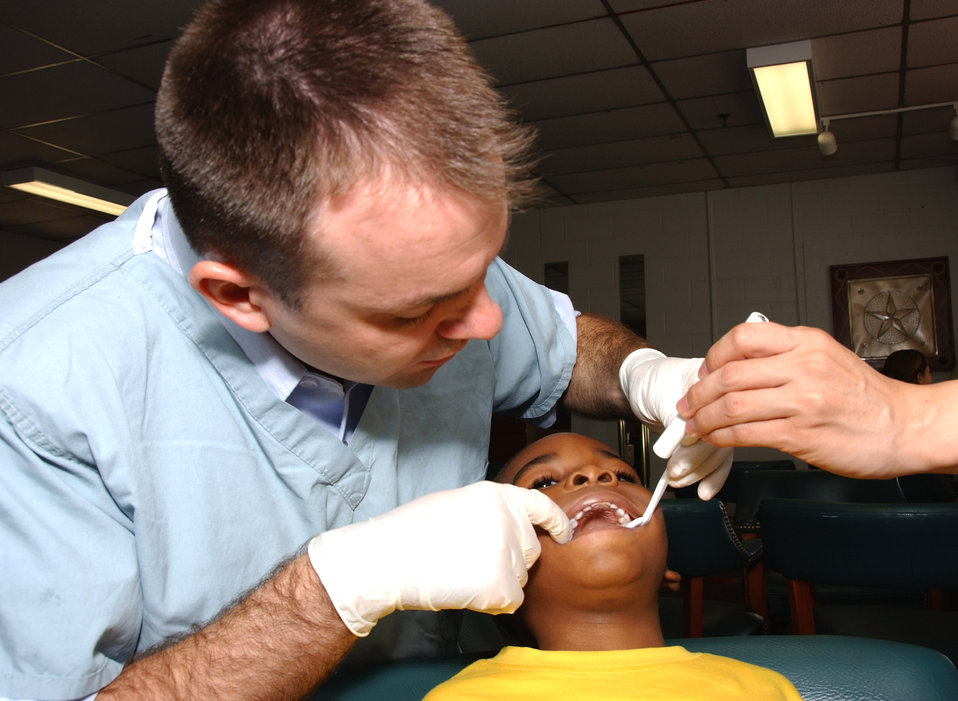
Course prepares dentists to treat children worldwide

Capt. Nathan Krivitzky examines the teeth of Ross Chandler Sept. 13 at Lackland Air Force Base, Texas. Captain Krivitzky is a Pediatric Dental Course resident from Aviano Air Base, Italy. Ross is the son of Senior Airman Cabrille Chandler, a 59th Medical Wing Support Squadron referral clerk.